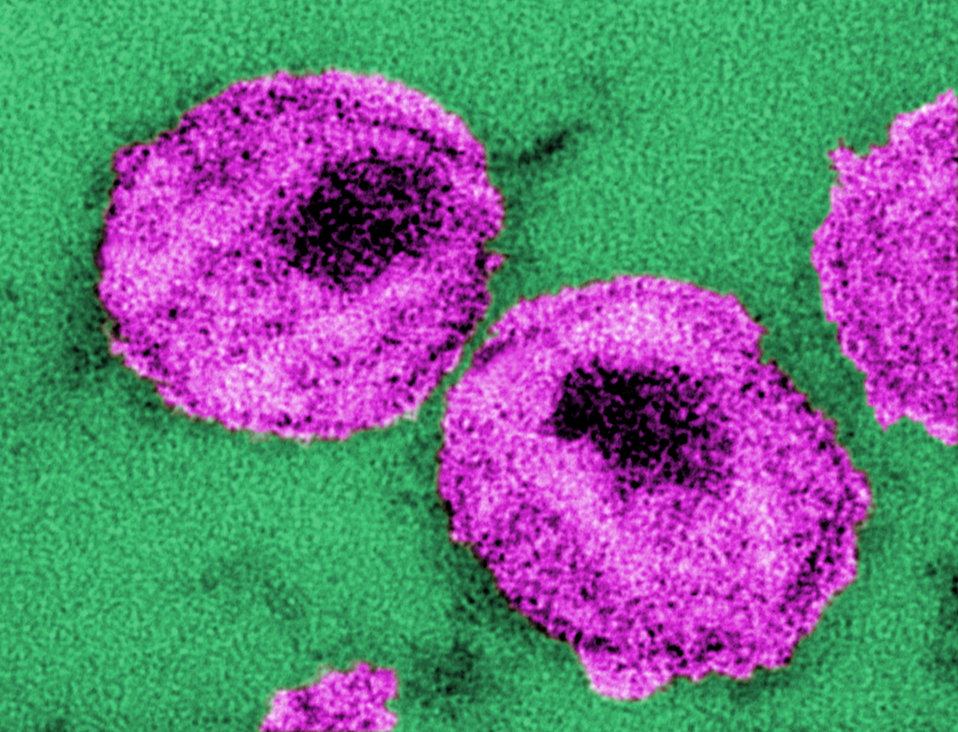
This thin-section transmission electron micrograph (TEM) depicted the ultrastructural details of a number of 'human immunodeficiency virus' (HIV) virus particles, or virions. A member of the genus Lentivirus, HIV is separated into two serotypes, HIV-1 and HIV-2, and is the cause for the disease known as acquired immunodeficiency syndrome, or AIDS. This virus may be passed from one person to another when infected blood, semen, or vaginal secretions come in contact with an uninfected person's broken skin or mucous membranes*. In addition, infected pregnant women can pass HIV to their baby during pregnancy or delivery, as well as through breast-feeding. People with HIV have what is called HIV infection. Some of these people will develop AIDS as a result of their HIV infection. See PHIL 8431 for a black and white version of this image.